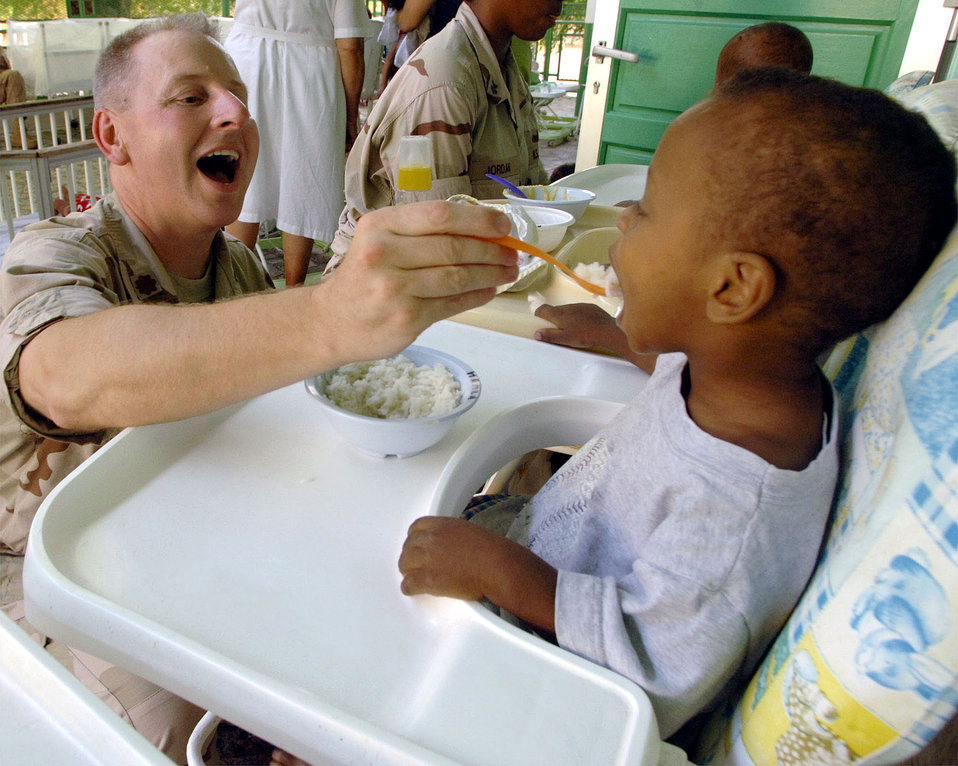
Servicemembers provide a little TLC

Chaplain (Maj.) Steven O'Brien feeds an orphaned toddler mashed potatoes at the Franciscan Missionaries of Notre Dame Baby Orphanage in Djibouti City, Djibouti. Chaplain O'Brien deployed to Camp Lemonier, Djibouti, from the 4th Air Force at March Air Reserve Base, Calif. The Camp Lemonier chapel staff arranges visits to this orphanage three times a week.